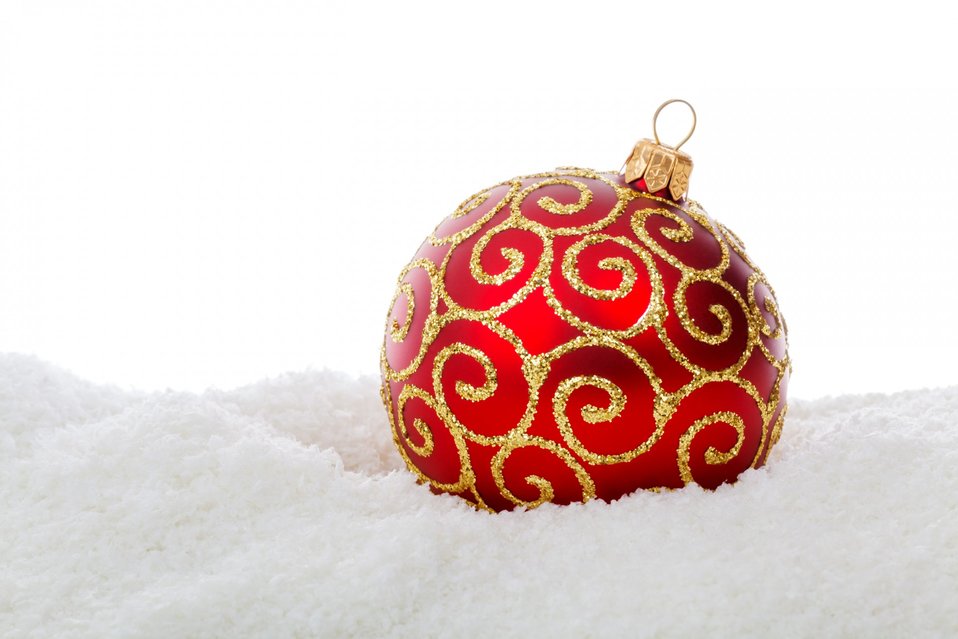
Red christmas ball in snow

Red golden christmas ball in snow isolated on white background.